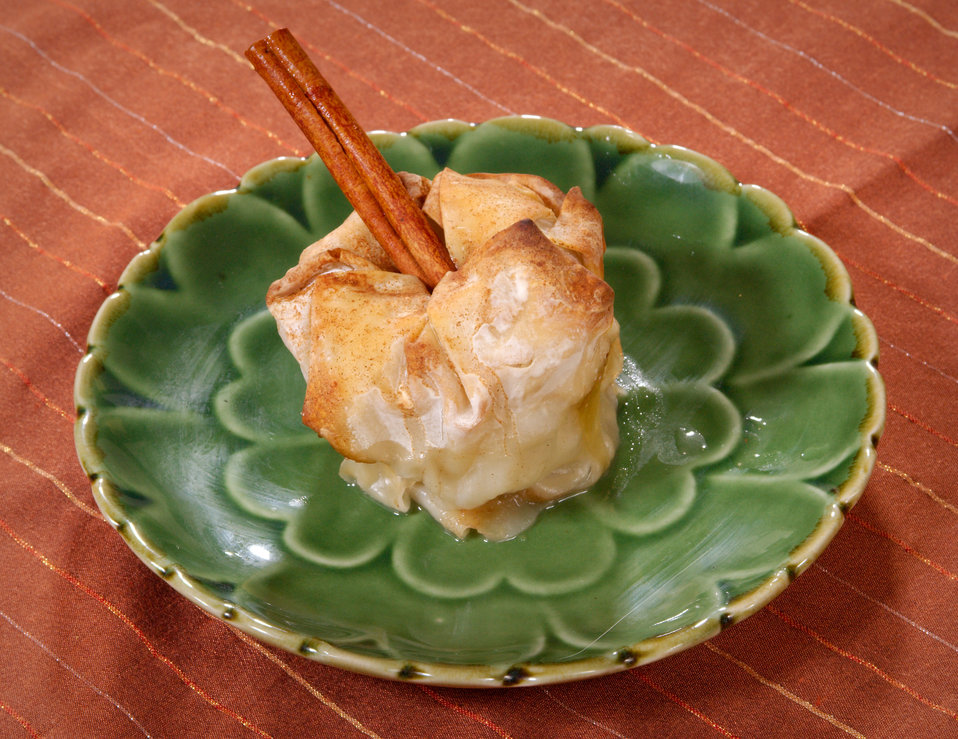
Now here's a healthy dessert choice, an Apple Dumpling. The recipe, which may be accessed using the link below, is a simple one, calling for small apples, brown sugar, cinnamon, vanilla extract, egg roll wrappers, and cornstarch. Incorporating fruit and low-sodium, low-fat ingredients, this dessert makes for the healthier choice over and above saltier, more calorie-dense counterparts.